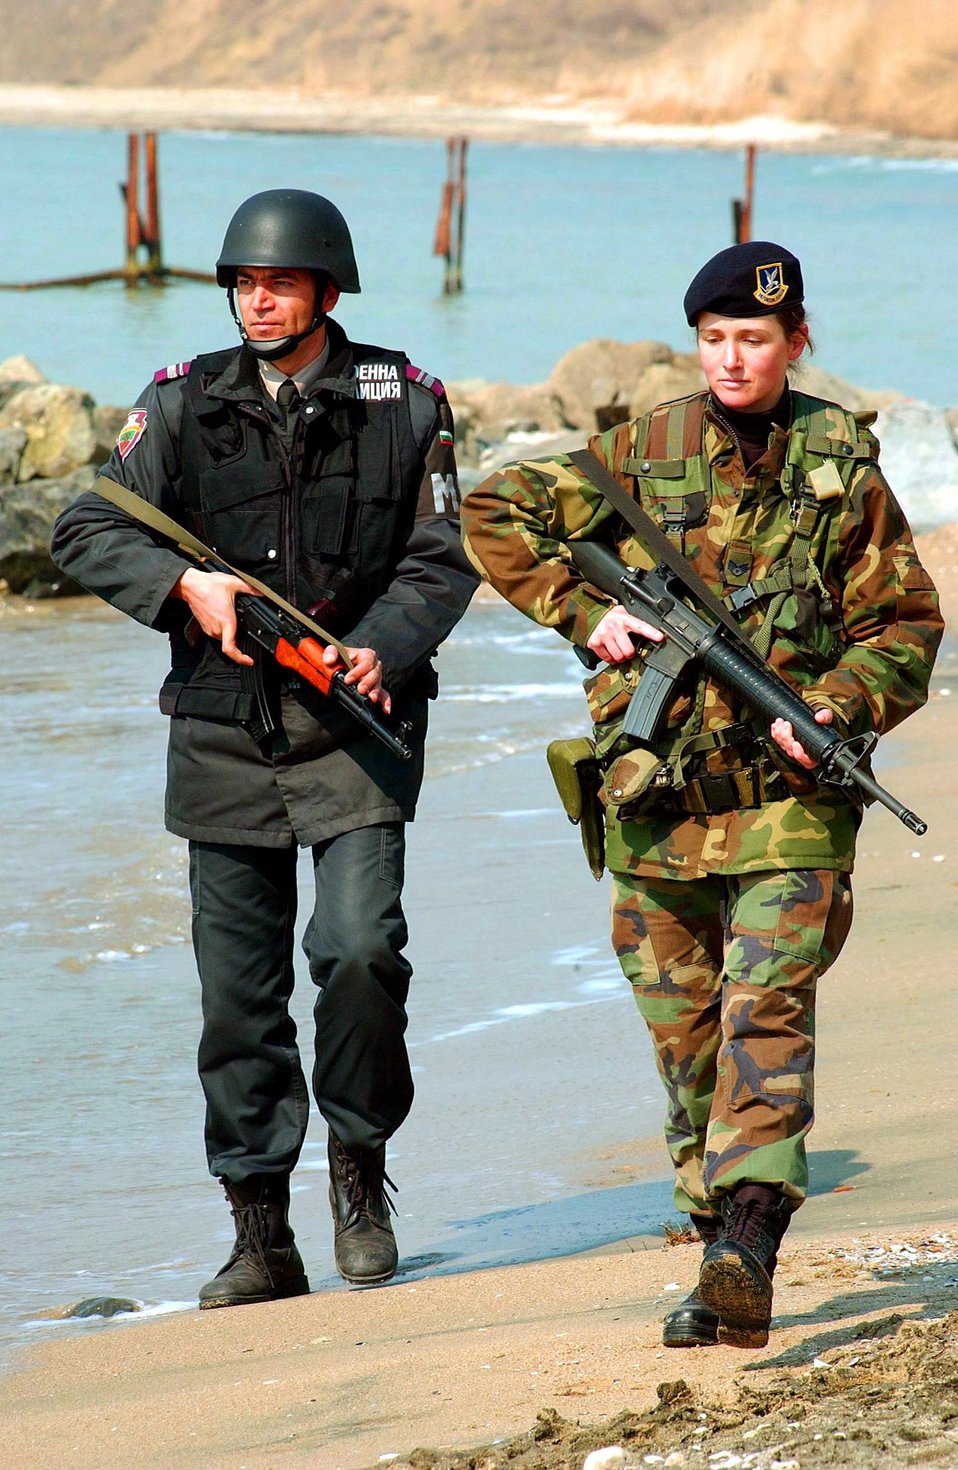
Beach patrol

CAMP SARAFOVO, Bulgaria -- Jeko Jekov (left), Bulgarian military police, and Staff Sgt. Olga Valery, 409th Air Expeditionary Group security forces, patrol the beach area here. U.S. security forces airmen work with Bulgarian military police to maintain security on Camp Sarafovo and at the Burgas International Airport. Pilots from the 409th AEG fly air refueling operations with KC-10 Extender aircraft supporting Operation Iraqi Freedom.